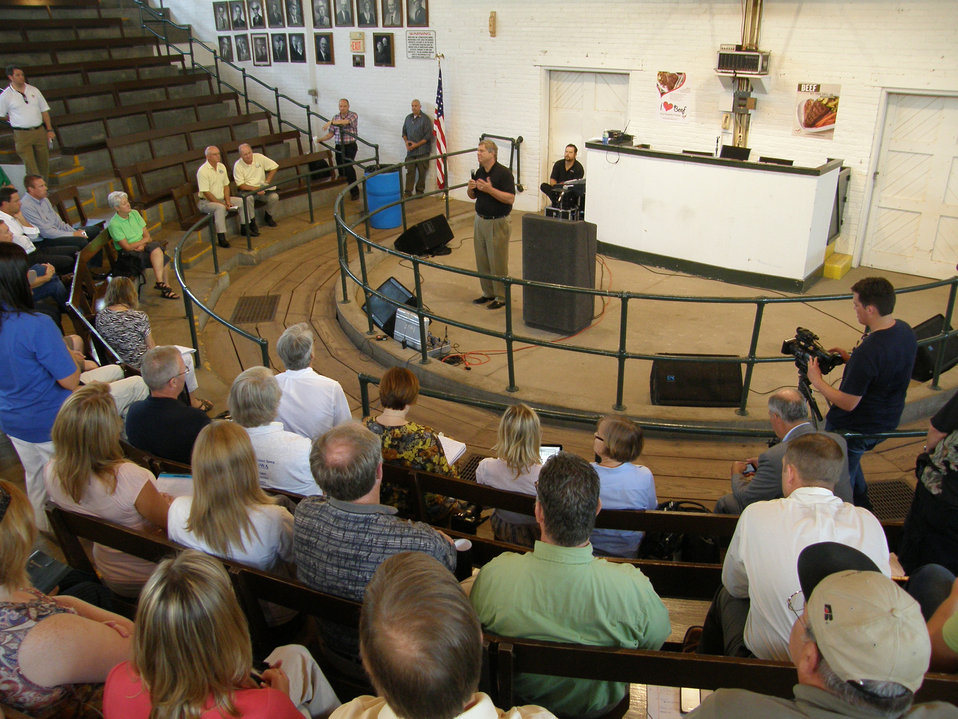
Agriculture Secretary Tom Vilsack speaks with steakholders at the Iowa State Fair during the White House Rural Forum .